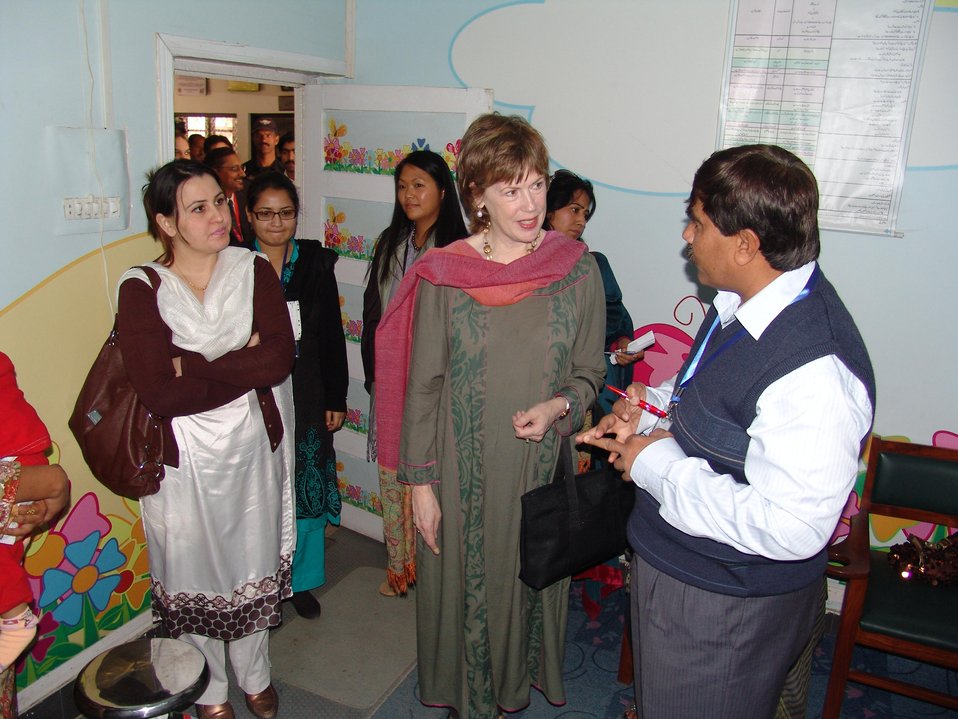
Rural Health Center Care for Mothers and Newborn Children

Gujar Khan, March 6, 2012 – Dr. Marilyn Wyatt, wife of U.S. Ambassador Cameron Munter talking with healthcare workers.